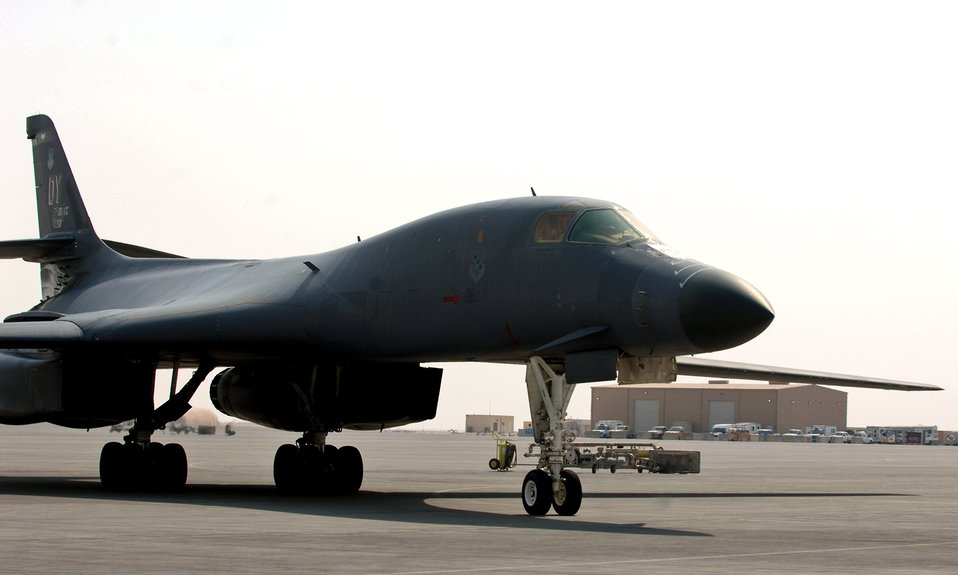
Airpower Summary for Aug. 21, 2007

An Air Force B-1B Lancer awaits its next mission at a base in Southwest Asia. B-1s fly close-air-support missions for both Operation Enduring Freedom and Operation Iraqi Freedom.